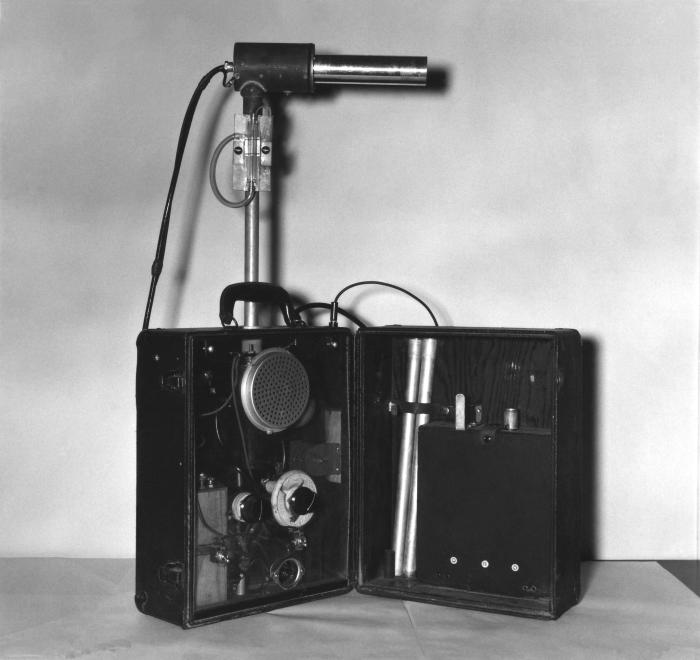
This historical photograph was provided by the Center for Disease Control's (CDC), National Institute for Occupational Safety and Health (NIOSH). Reprinted from the February, 1951, 'Industrial Hygiene Newsletter'. The image depicted an inexpensive flowmeter designed by the Public Health Service hygienists, Andrew Hosey and Herb Jones. It measured concentrations of pollutants in the air.